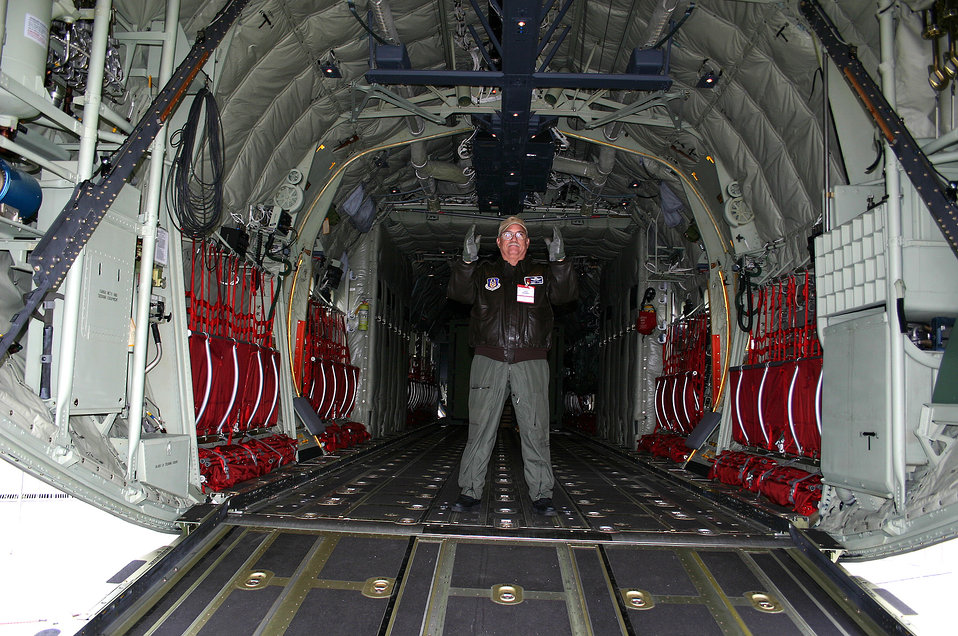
C-130J displays interoperability at Berlin Air Show

Chief Master Sgt. Michael Scaffidi guides a Medium Extended Air Defense System onto a C-130J Hercules during a demonstration of the aircraft's interoperability at the Berlin Air Show. Various models of U.S. military aircraft and about 60 support personnel from bases in Europe and the United States are attending the air show at Berlin-Schoenefeld Airport May 16-21. Chief Scaffidi is a loadmaster assigned to the 53rd Weather Reconnaissance Squadron at Keesler Air Force Base, Miss.